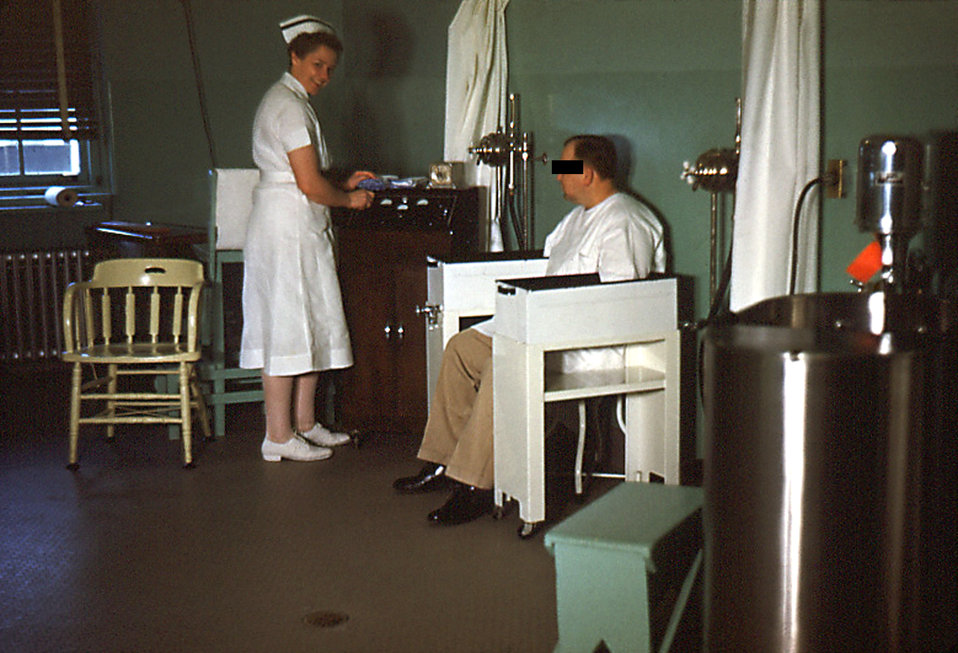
In this historic photograph, the interior of the Carville, Louisiana Leprosarium's hydrotherapy room was revealed, where a public health nurse was making adjustments to the hydrotherapy machines prior to conducting a therapeutic treatment upon one of the leprosarium's patients. When on duty, the nurse was in charge of all treatments involving the electrical appliances found in this clinical setting that were therapeutically prescribed in order to treat leprosy's crippling effects on the hands and feet.